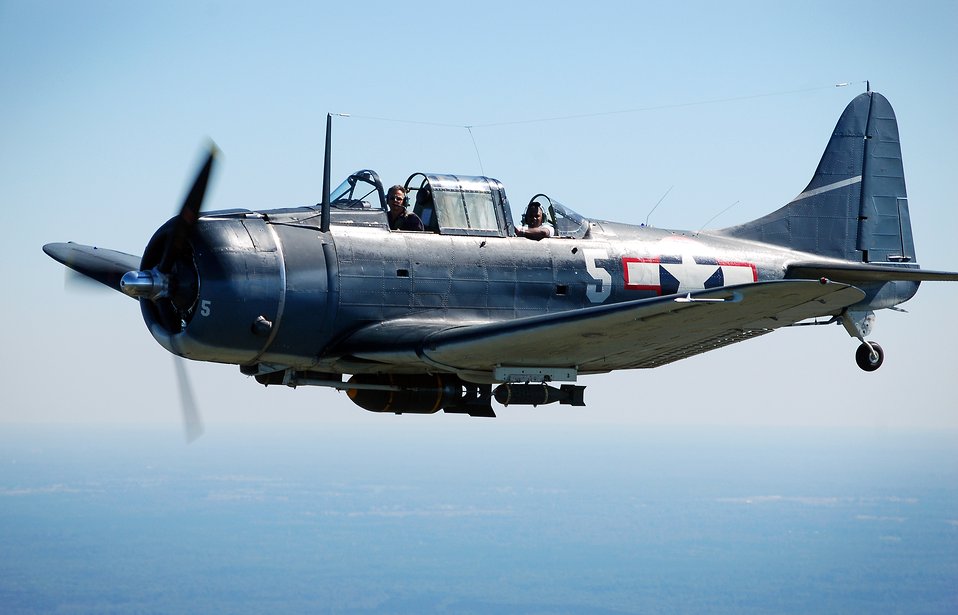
Air Force Week Atlanta wraps up

A vintage World War II aircraft, the SBD Dauntless, flies over Falcon Field during the Great Georgia Air Show as part of Air Force Week Atlanta Oct. 12 over Peachtree City, Ga.